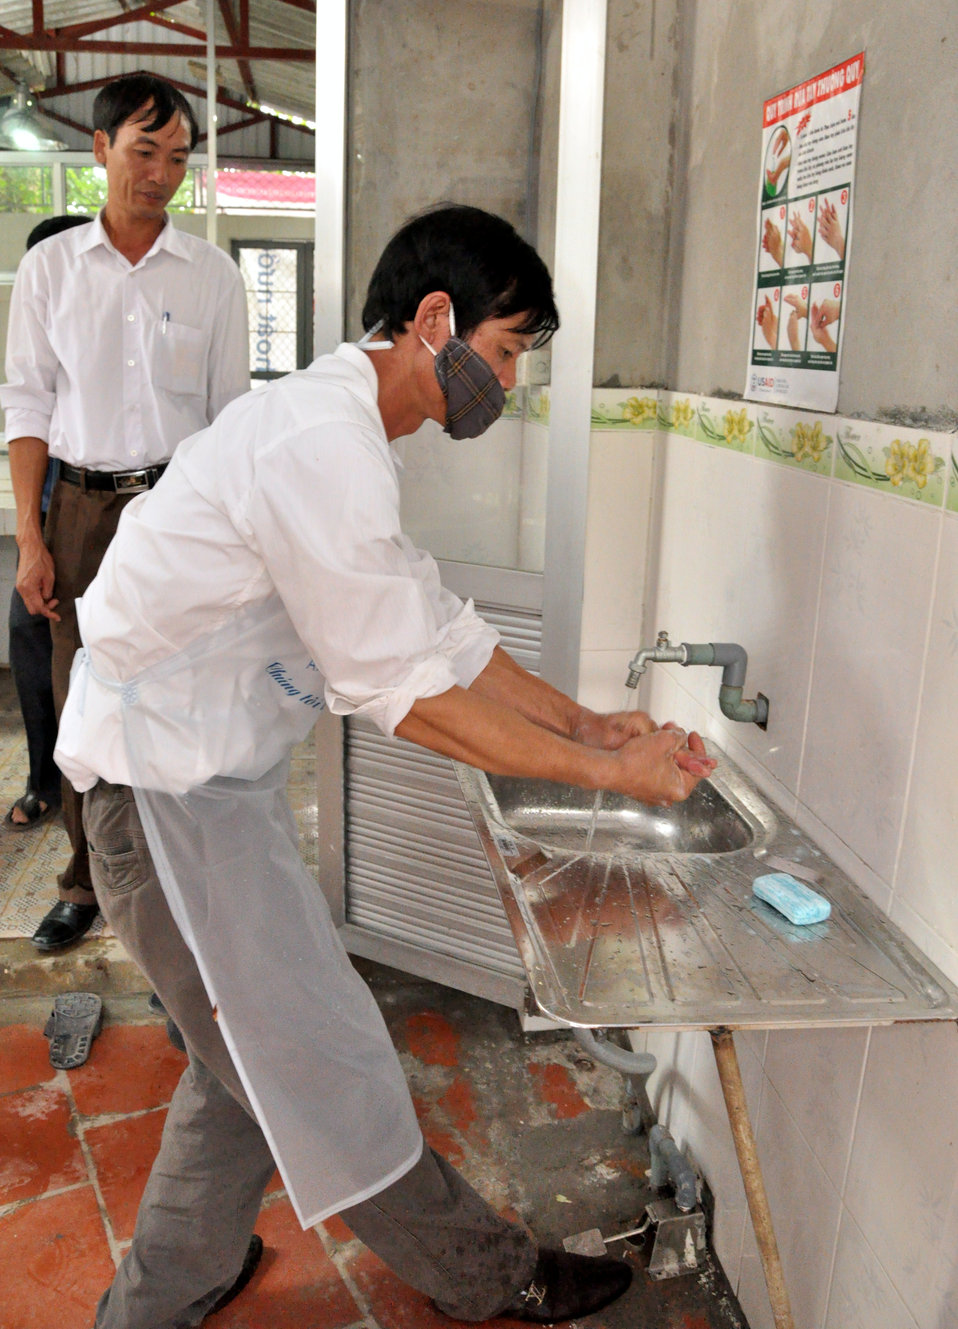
Handover Ceremony Hoa Mac Market Ha Nam

October 26, 2012